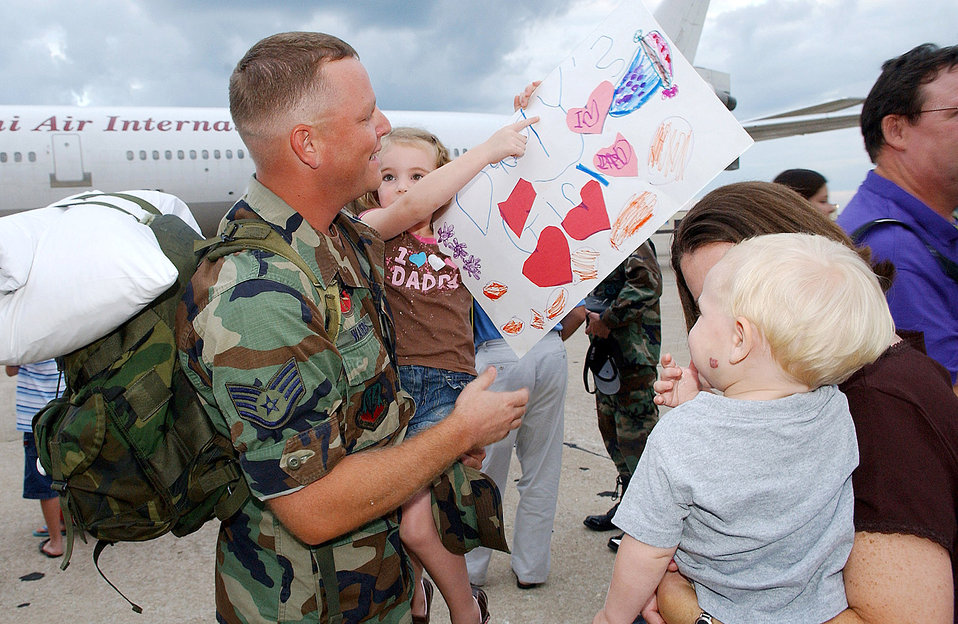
Welcome home

Four-year-old Raegan Waters shows her father, Staff Sgt. John Waters, the sign she made to welcome him home. Her mother, Michelle, and 1-year-old brother, Reece, wait for their hugs. Sergeant Waters, assigned to the 509th Maintenance Squadron at Whiteman Air Force Base, Mo., returned Aug. 29 from a four-month deployment in support of Operation Ocean Fury at Andersen AFB, Guam.